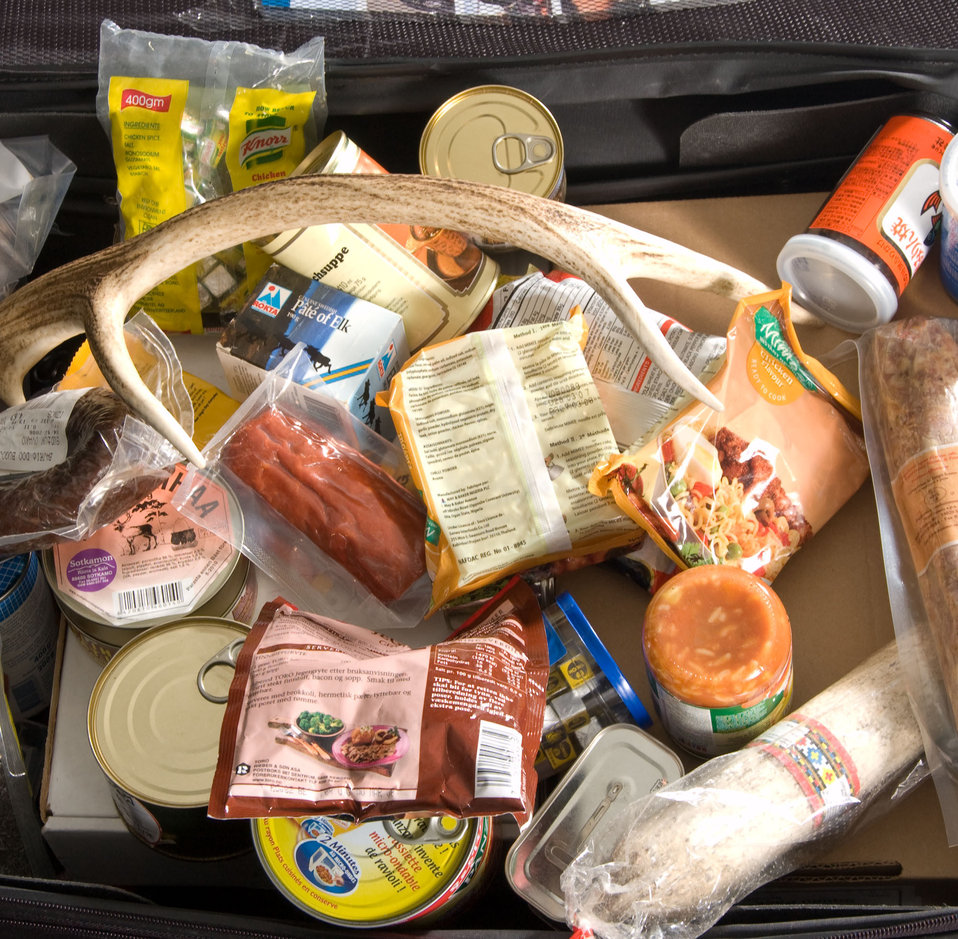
2 Ag Items In Passenger Baggage

Agricultural items in passenger baggage.